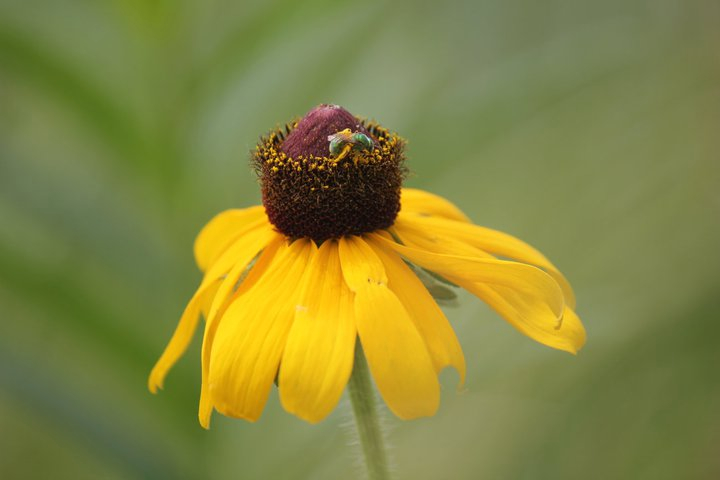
black-eyed susan

Great River and Clarence Cannon National Wildlife Refuge, MO